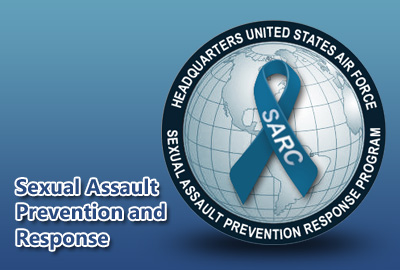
Sexual assault response program